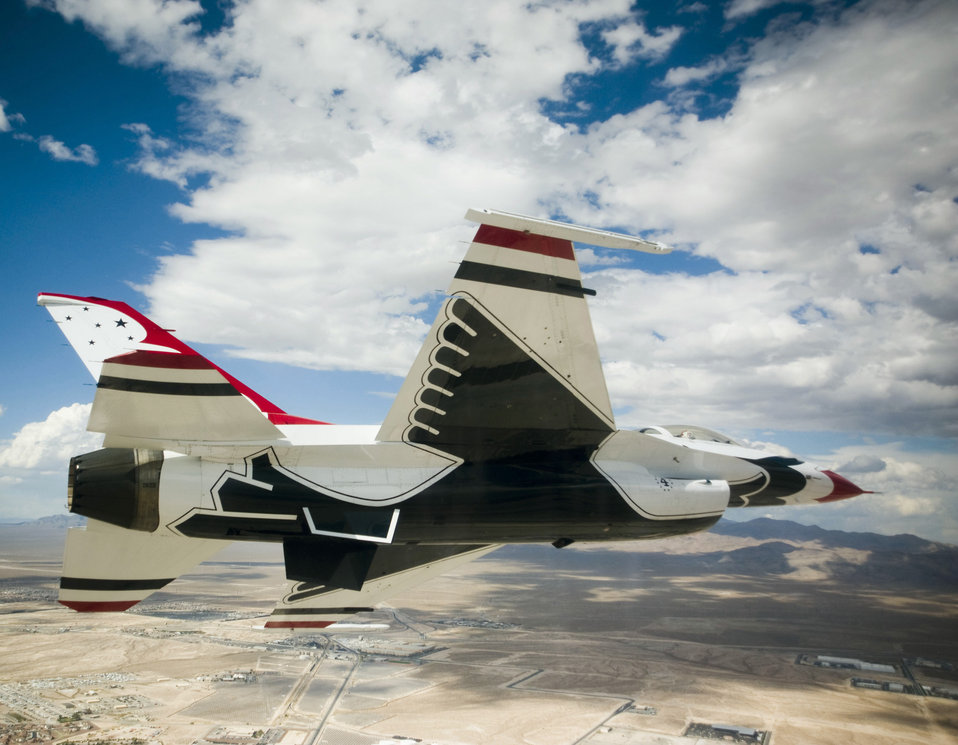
High-flyin' Thunderbird

Thunderbird 4 piloted by Maj. Sean Gustafson prepares to land Oct. 4, 2010, at Nellis Air Force Base, Nev. The Air Force Demonstration Squadron Thunderbirds were finishing a practice show at nearby Creech AFB.